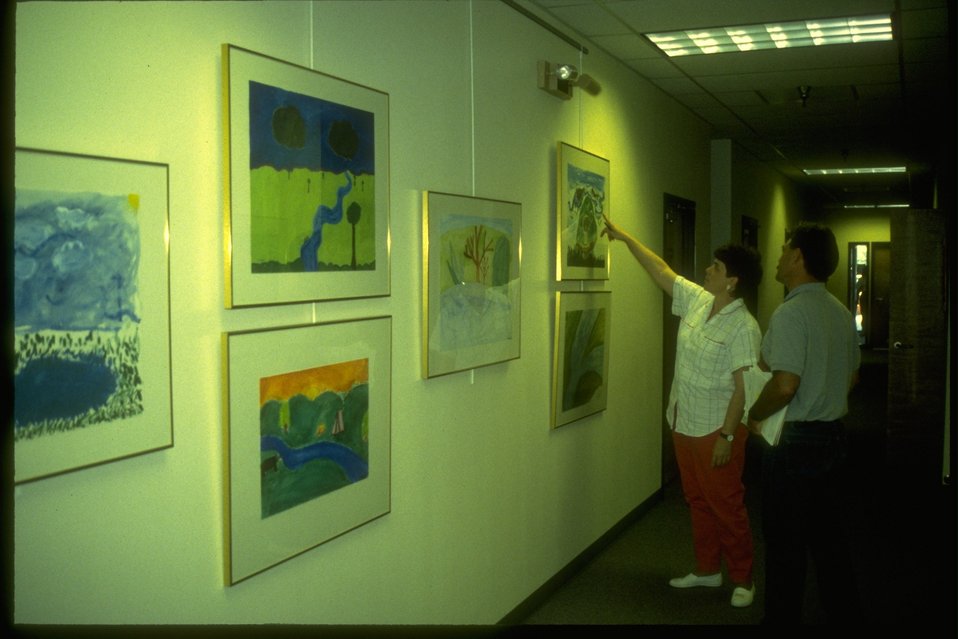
Kids at projects on display.